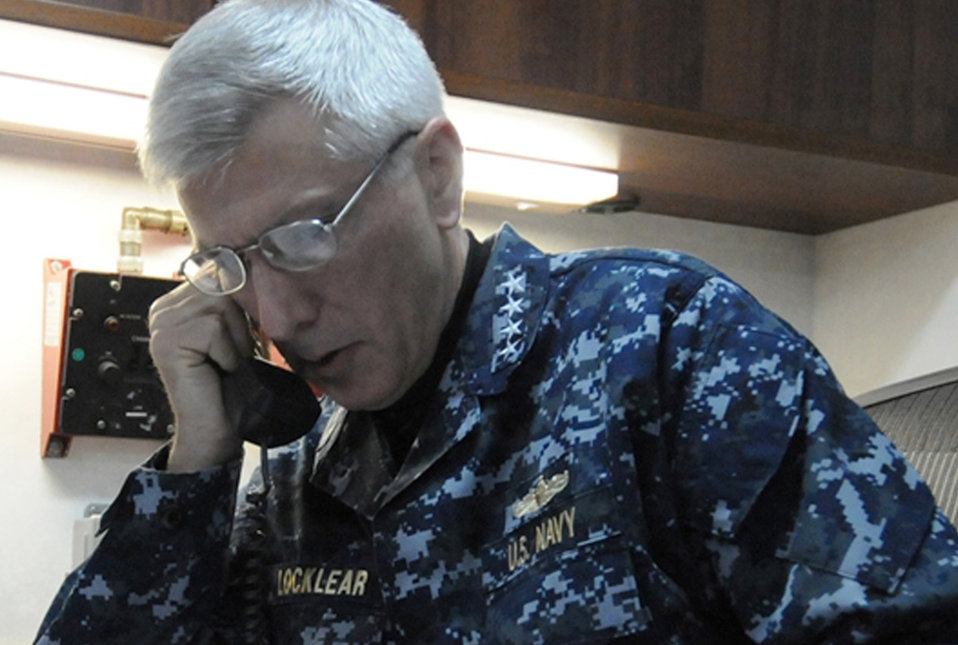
Task force commander provides Libya update

Navy Adm. Samuel J. Locklear III conducts a telephone interview with Pentagon reporters March 22, 2011, from the USS Mount Whitney in the Mediterranean Sea. Admiral Locklear is the commander of Joint Task Force Odyssey Dawn.